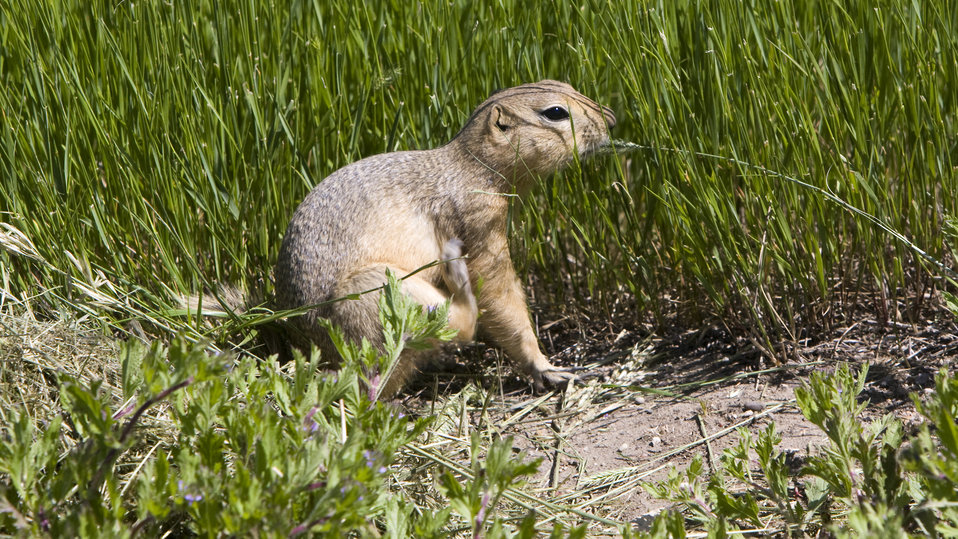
Gopher at Medicine Lake NWR

That Hard to Reach Spot - This Gopher didn't care one iota that my three-ton-truck was growling just inches from him; he had an itch, and he took care of it while chewing on on some crested wheat.

Location: Medicine Lake NWR

Credit: Jamieson Scott / USFWS

Photo Contest Entry #24